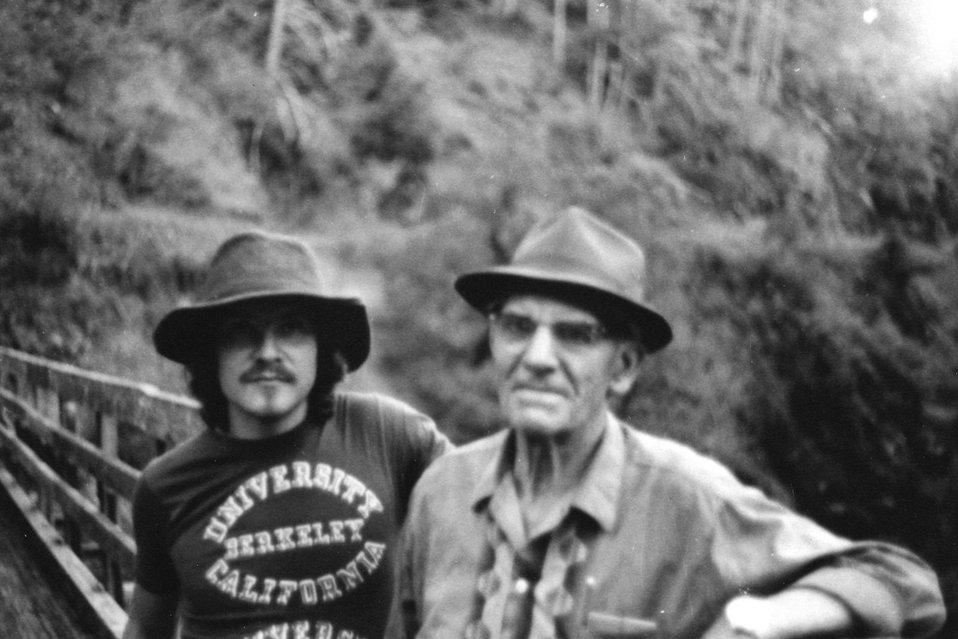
Tom and Ivin Billings take on on bridge at Mule Creek C. 1977